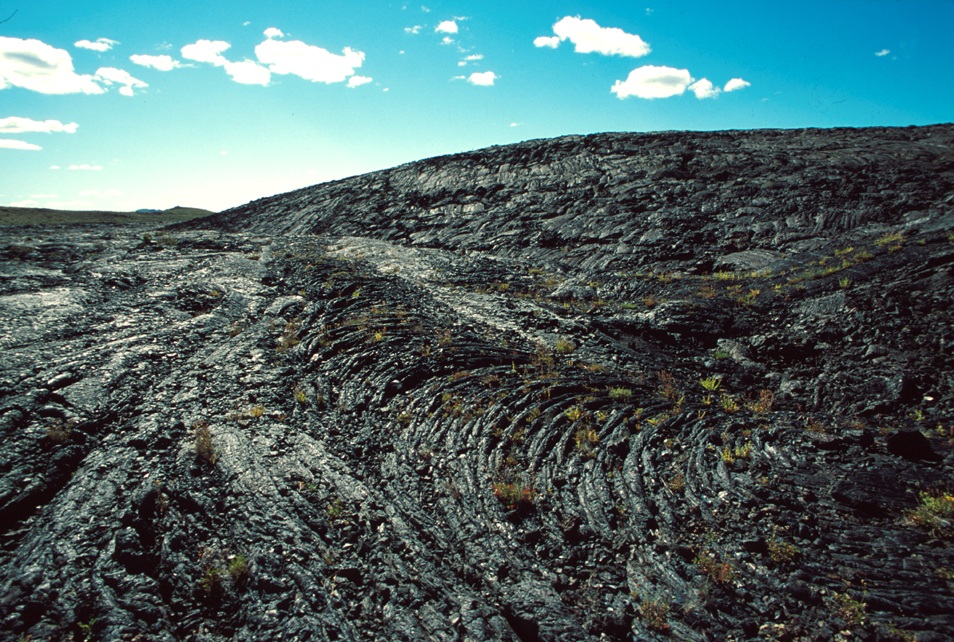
Craters of the Moon National Monument Shoshone Field Office USRD Upper Snake River District